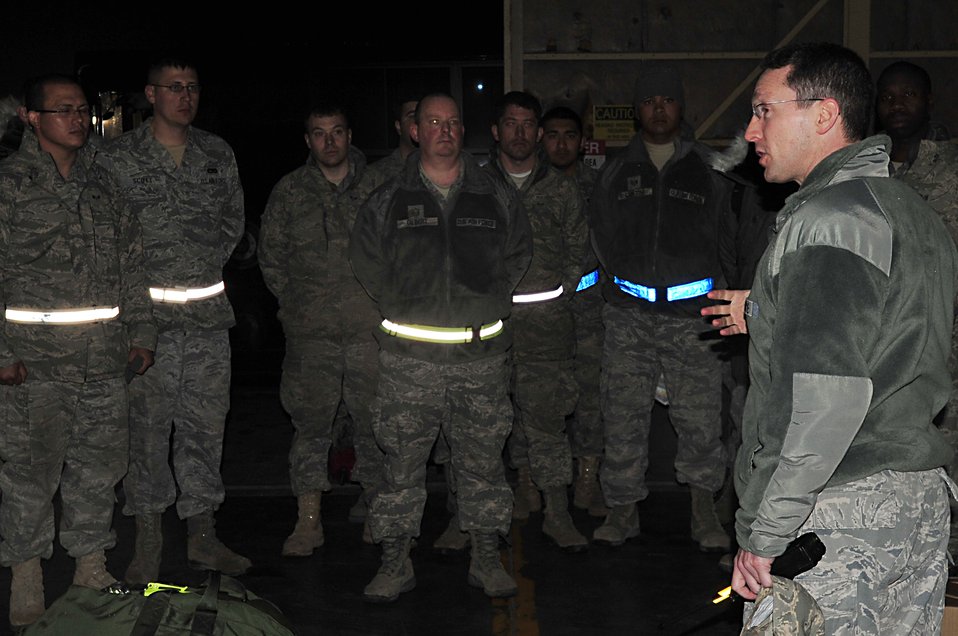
Airmen returns from delivering U.S. AID workers and equipment

MISAWA AIR BASE, Japan -- Col. Michael Rothstein, 35th Fighter Wing commander, takes time to thank Airmen for their support Mar. 15. Airmen have been making a difference with the local Japanese community by volunteering their time to help support humanitarian relief efforts during Operation Tomodachi.